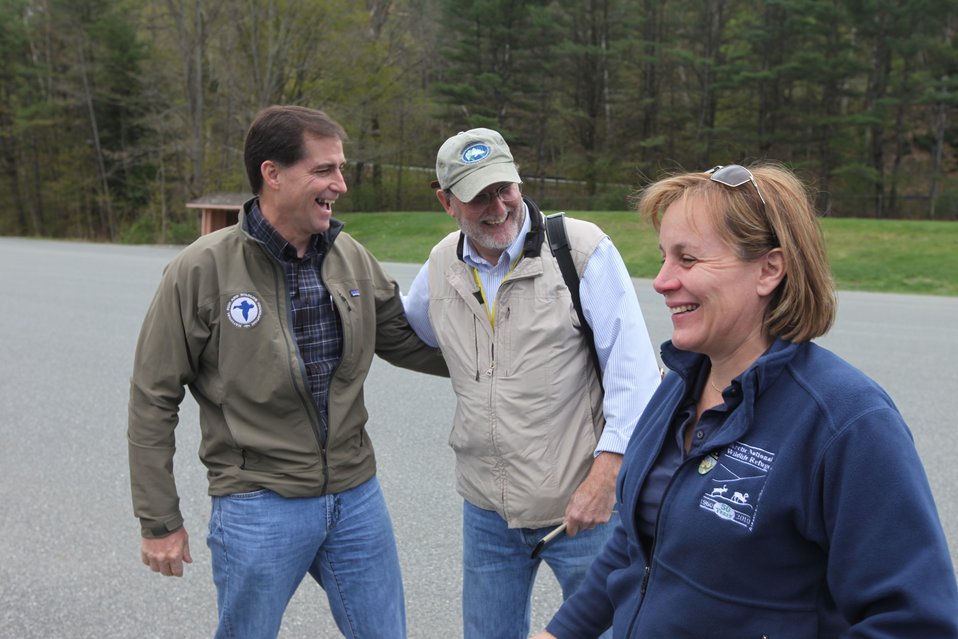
Jamie Geiger welcomes the Director

U.S. Fish & Wildlife Service Director Dan Ashe visits the Northeast Region
for a tour of the White River National Fish Hatchery in Bethel, Vermont on
April 27, 2012. The hatchery was devastated by Tropical Storm Irene and
Dan Ashe had the chance to meet and thank the staff for their heroic work.
Director Ashe also visited restoration/flood response/fish passage project
sites in Rochester, Vermont and met with local officials and staff from the
White River Partnership.